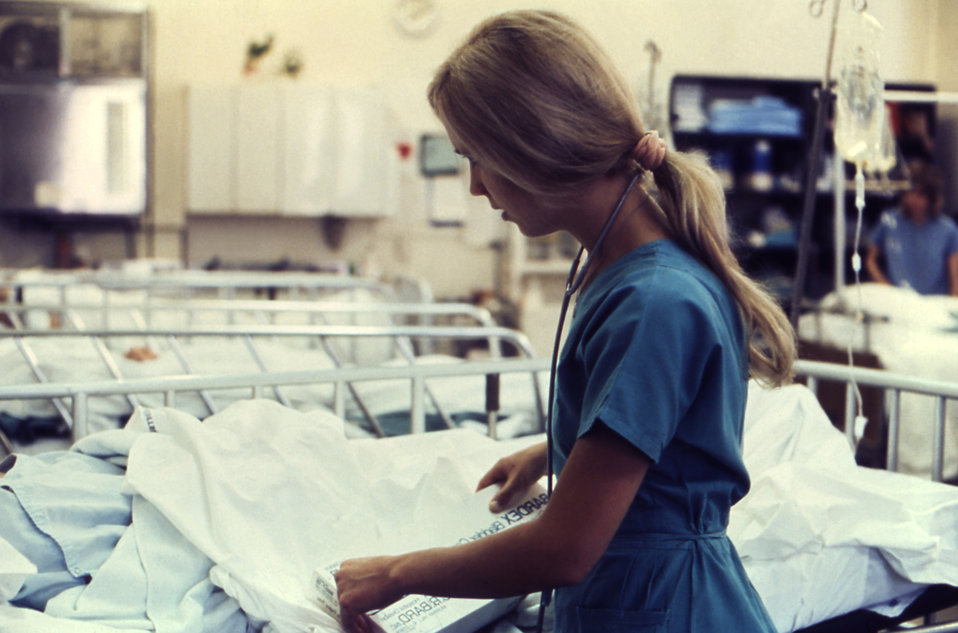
Nurse with patient

Lying atop a mobile gurney, a patient was being prepped and coached just prior to the subsequent medical procedure that was about to take place in this hospital setting. The nurse was wearing her requisite blue colored hospital scrubs, and had draped a stethoscope around her neck.